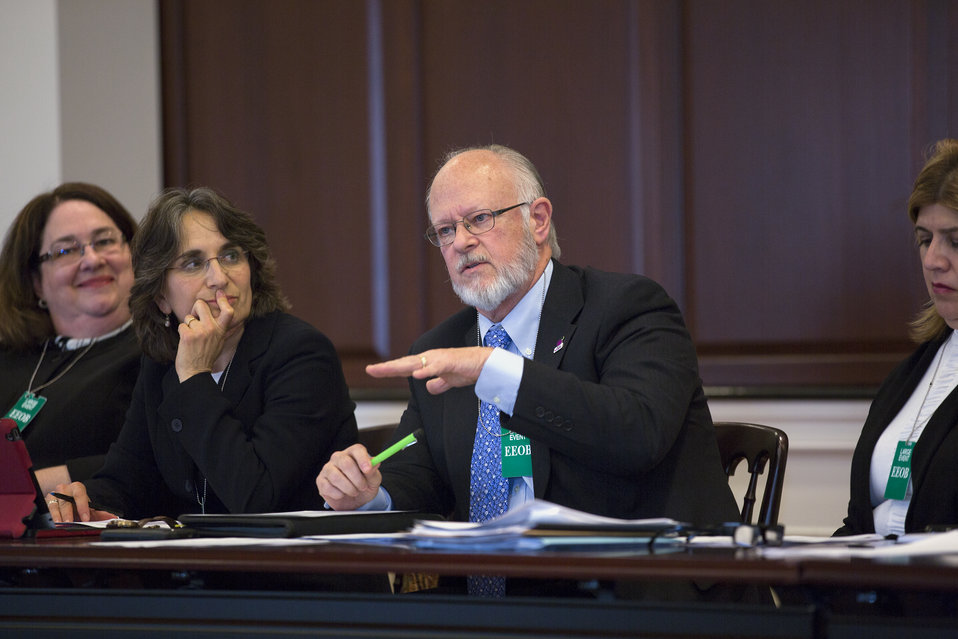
Bill Clark, Executive Director of Philabundance, discusses Administration efforts and public private partnerships to increase healthy food access in rural and urban communities at a White House Rural Council Forum in Washington, DC on Tuesday, Feb. 4, 2014.